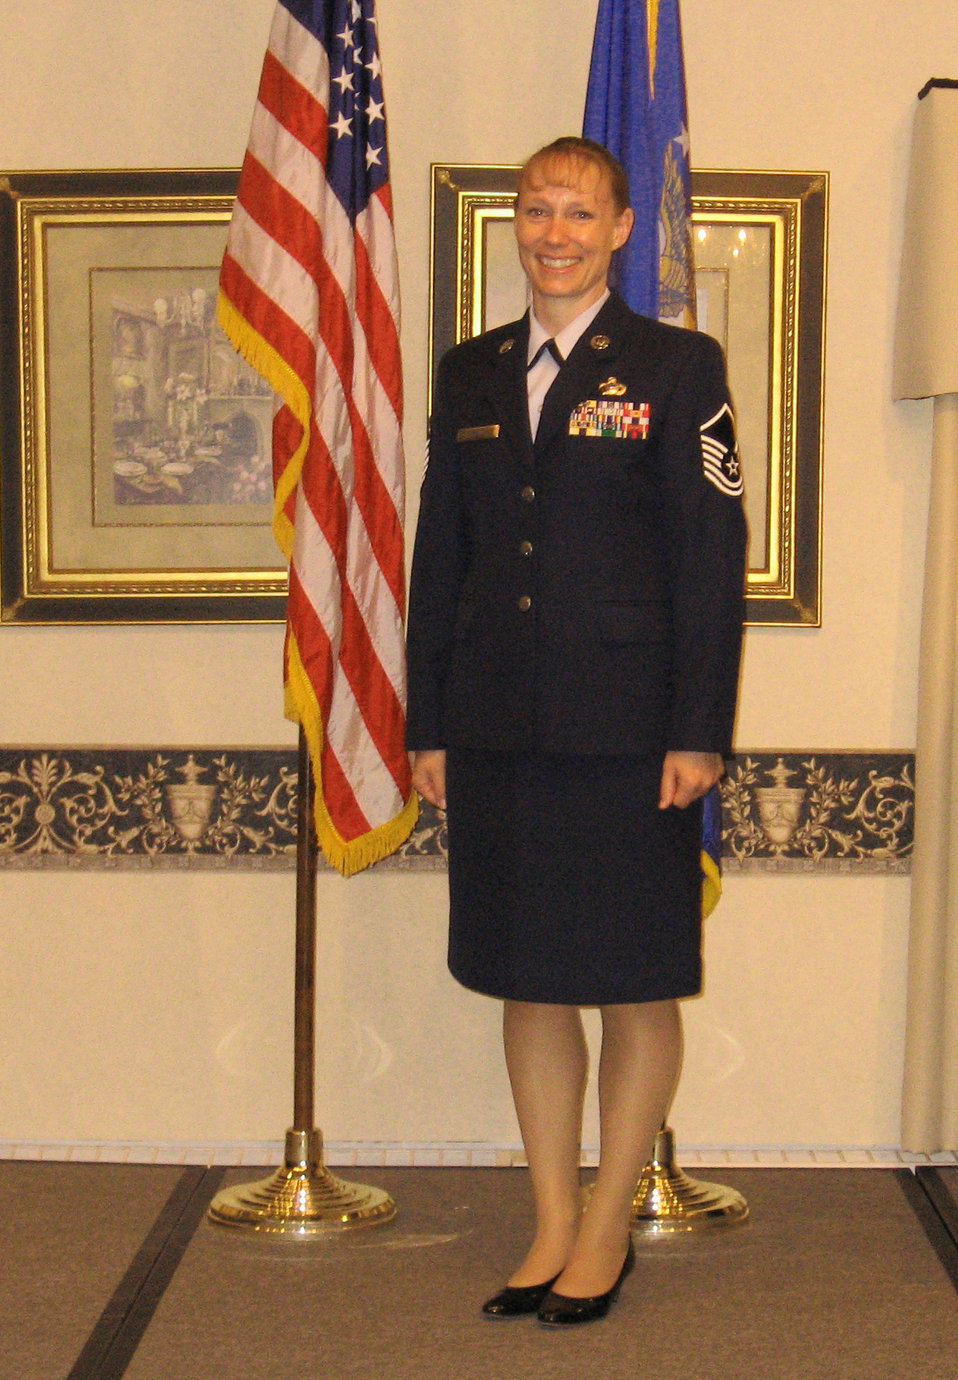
Casey Piton, Administrative Assistant/Marquette Biological Station in Region 3, entered the U.S. Air Force in August 1987 as an Airman Basic (E-1) and retired in September 2007 as a Master Sergeant (E-7). She held assignments at Nellis AFB, Nevada; San Vito, Italy; and Minot AFB, North Dakota. She was deployed to Kirkuk, Iraq, and was there when Saddam Hussein was captured (less than 50 miles away). She earned honors as Air Combat Command Airman of the Year, 6-time Base Personnel Specialist of the Year, and Basic Training Honor Graduate.